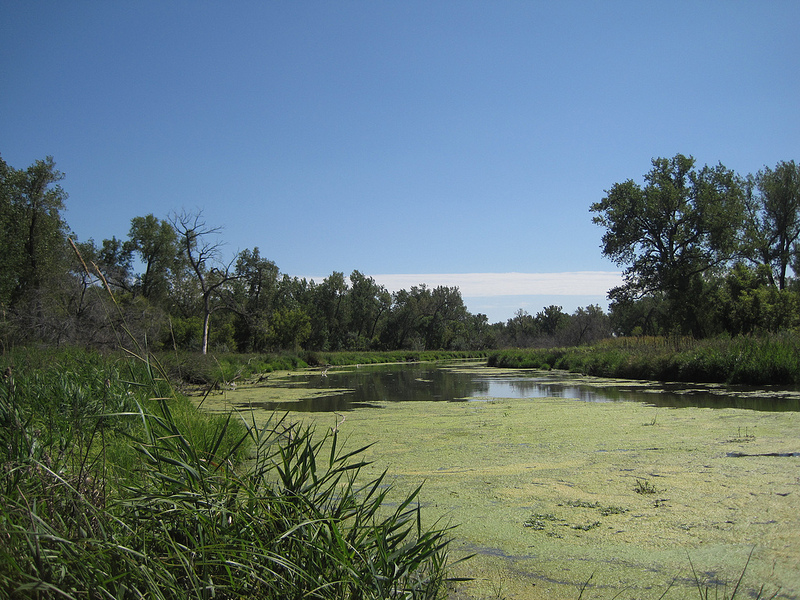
Loup River Slough

A shot of a large slough along the Loup River.

Location: Prairie Wolf Wildlife Management Area near Genoa, Nebraska

Credit: Lindsay Vivian / USFWS

Photo Contest Entry #43